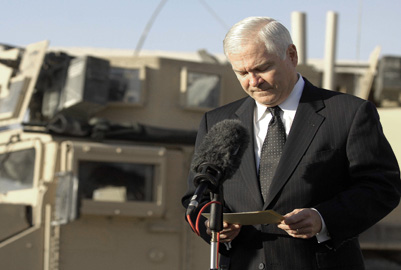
Gates: Congress must address 'crisis on my doorstep'

Secretary of Defense Robert M. Gates looks over his notes as he talks with members of the press on Kandahar Air Field, Afghanistan, Dec. 11, 2008. Recently, Secretary Gates addressed the failure of Congress so far to pass the fiscal 2011 defense appropriations bill, which creates the possibility of funding the department under a year-long continuing resolution instead, is